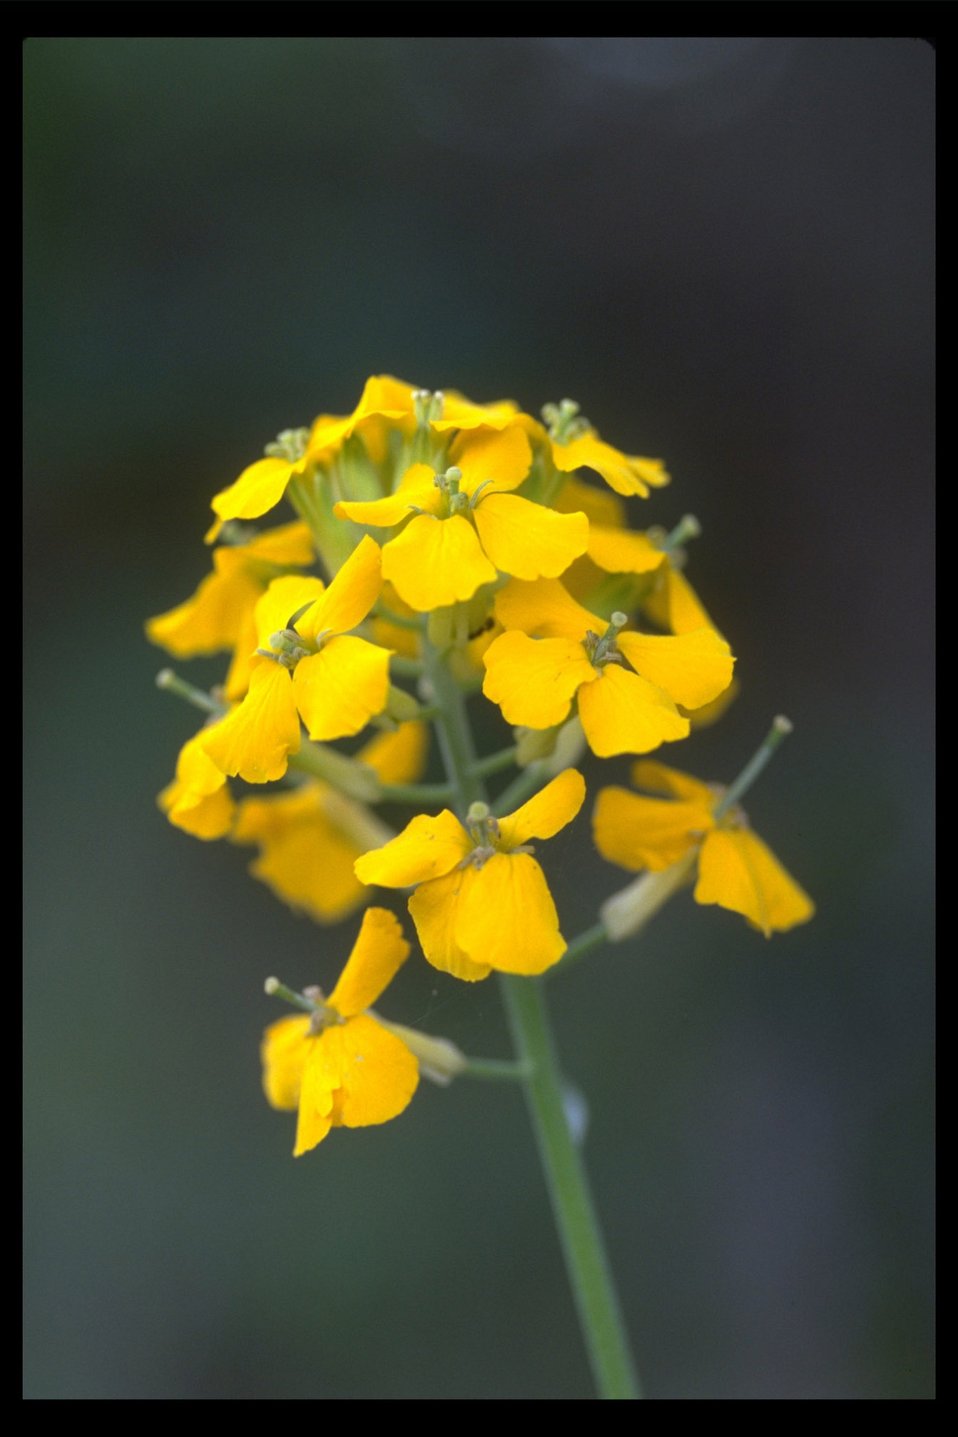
Western Wallflower (Erysimum capitatum) at Evans Creek.